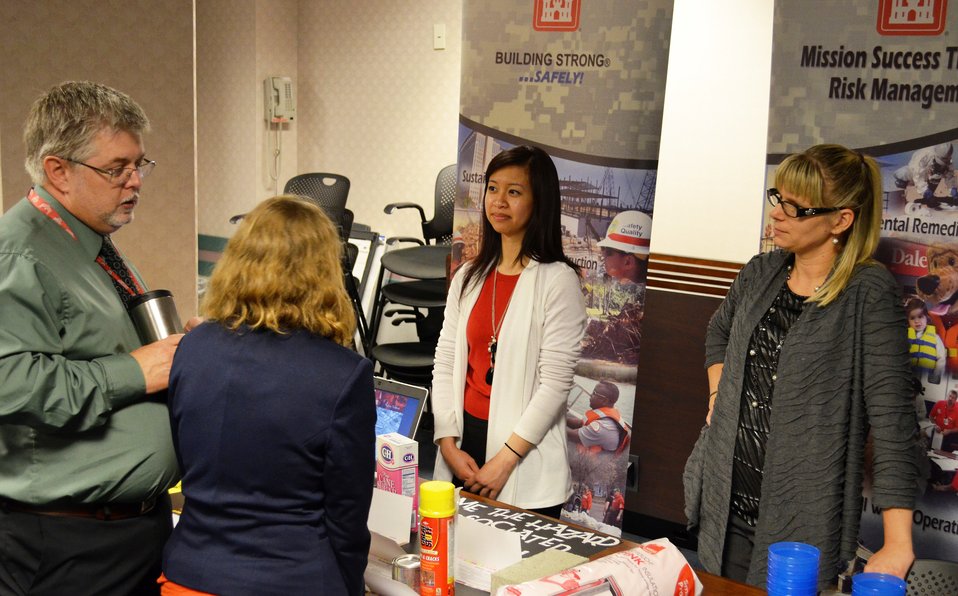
Bring Your Child to Work Day teaches kids about science, technology

(From right) Melanie Prescott and Karen Macatangay with the U.S. Army Corps of Engineers Sacramento District safety office, explain the importance of safety and ways to reduce risk on Corps project sites during the during the “Bring Your Child to Work Day” event April 24, 2014, at district headquarters in Sacramento, Calif. The district hosted the event to encourage kids to pursue careers in science, technology, engineering and mathematics, or STEM.